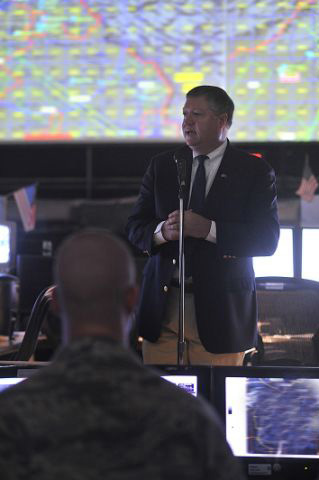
Secretary Donley visits the CAOC

Secretary of the Air Force Michael Donley talks to military personnel on the operations floor of the Combined Air and Space Operations Center, located in Southwest Asia on Oct. 11. The CAOC provides the command and control of airpower throughout Iraq, Afghanistan and 25 other nations, extending from Central Asia to the Horn of Africa.